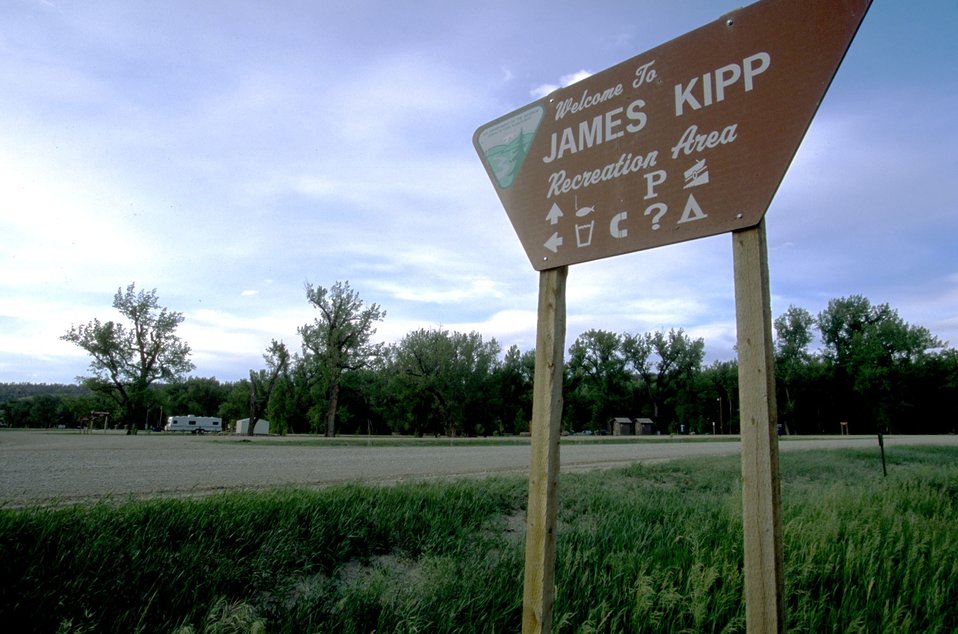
James Kipp Recreation Site sign